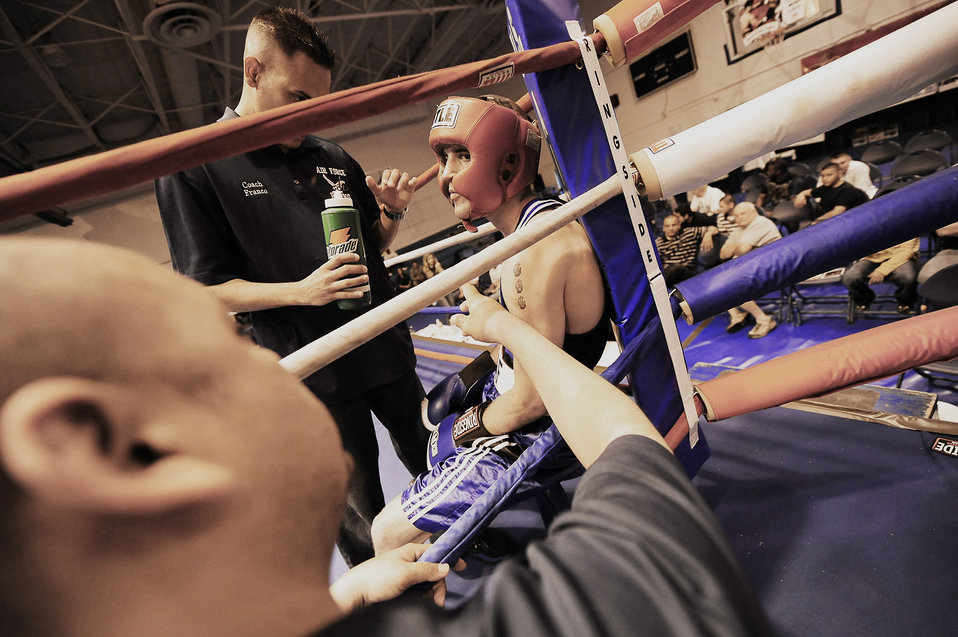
Contenders box for a spot

Senior Airman Matt McCoy listens to Coach Steven Franco after the second round during the Air Force Boxing Championships at the Bennett Fitness Center at Lackland Air Force Base, Texas, April 4, 2010. Airmen competed for a spot on the Air Force boxing team in front of a live audience.